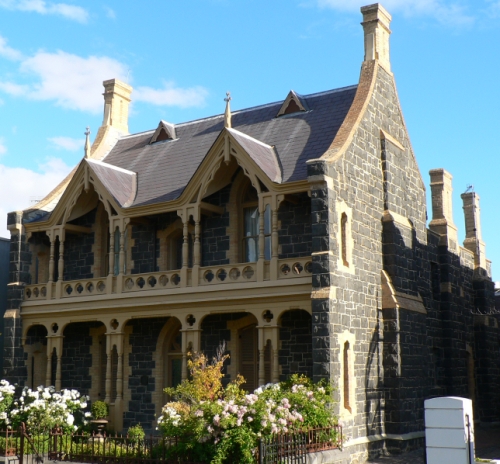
157 Hotham Street. East Melbourne, Australia.